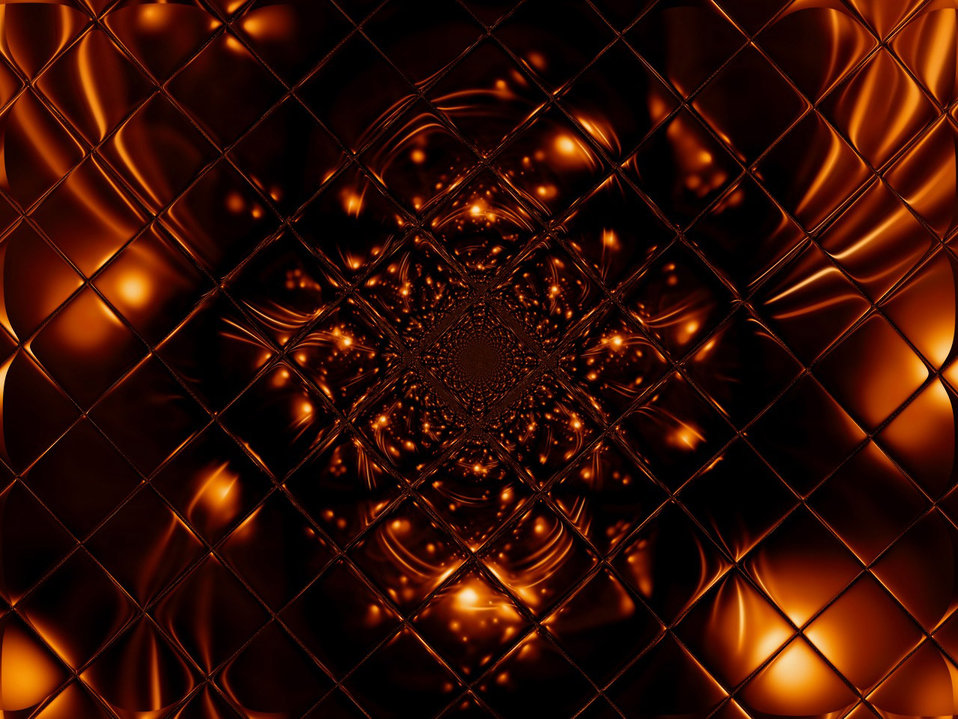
Fire glass fractal

Sparks fractal behind glass tile.